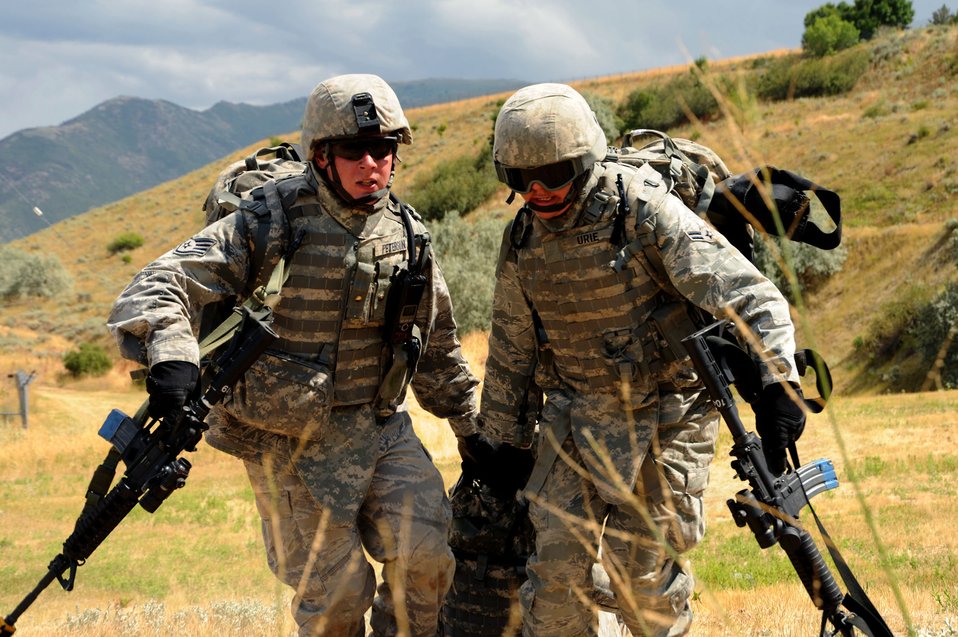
Security Forces Airmen take part in combat skills training

Staff Sgt. Jesse Peterson and Senior Airman Aaron Davis transport Senior Airman Andrew Hlavacek to safety during a 7-day combat skills training course Aug. 27, 2010, at Hill Air Force Base, Utah. The training focused on individual skills, self-aid and buddy care and encountering staged scenarios with hostile forces.